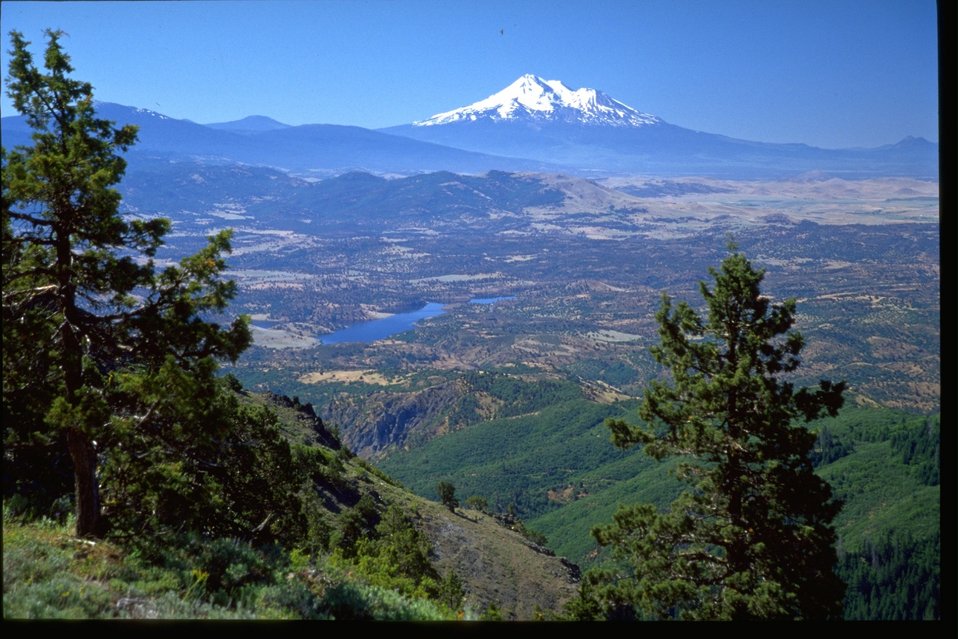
Scenic view of Mount Shasta and Irongate Reservoir.